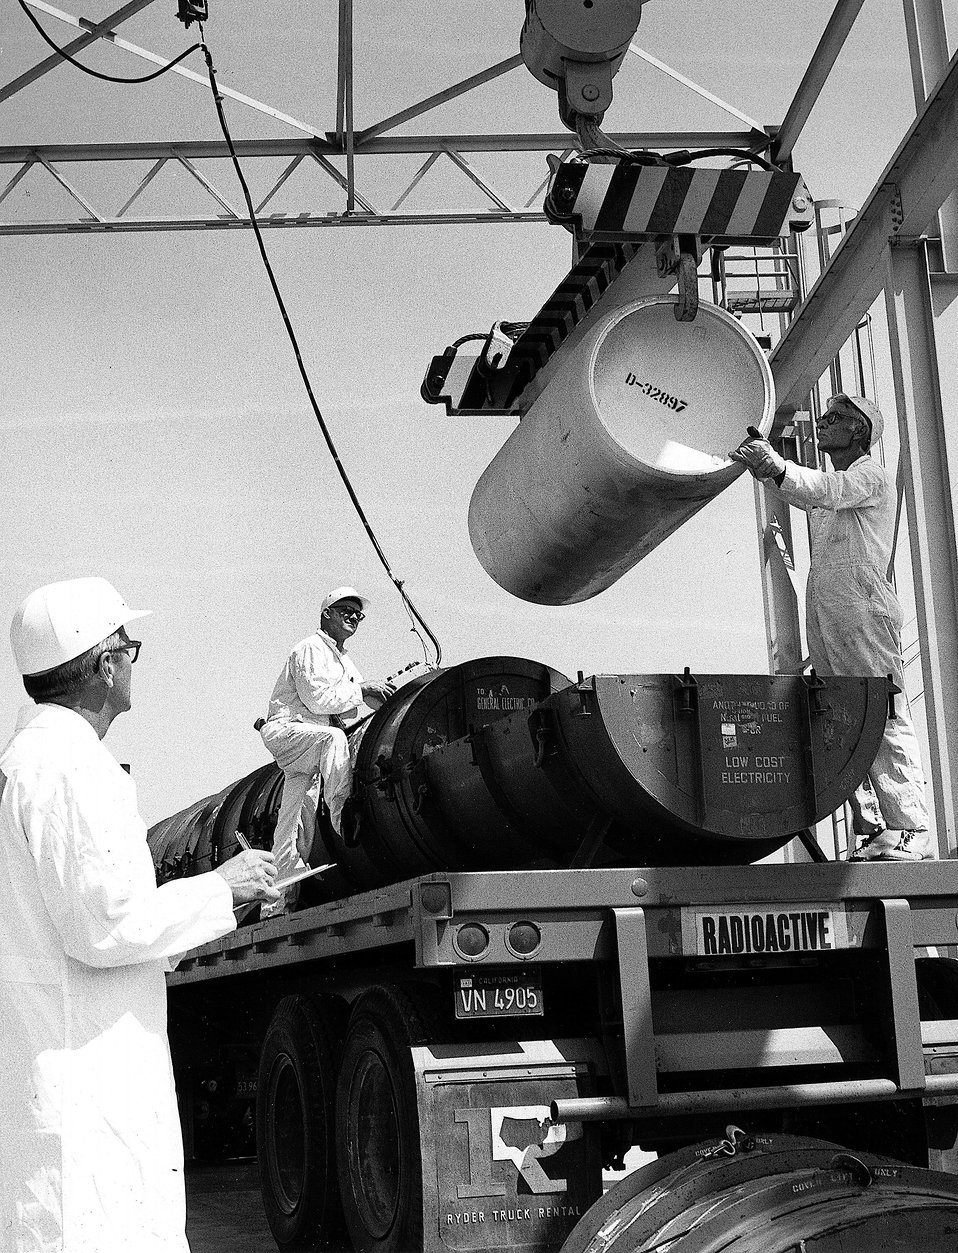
Workmen at the U.S. Atomic Energy Commission's Oak Ridge (Tennessee) Gaseous Diffusion Plant load a cylinder of uranium hexaflouride enriched in uranium 235. Circa 1969.